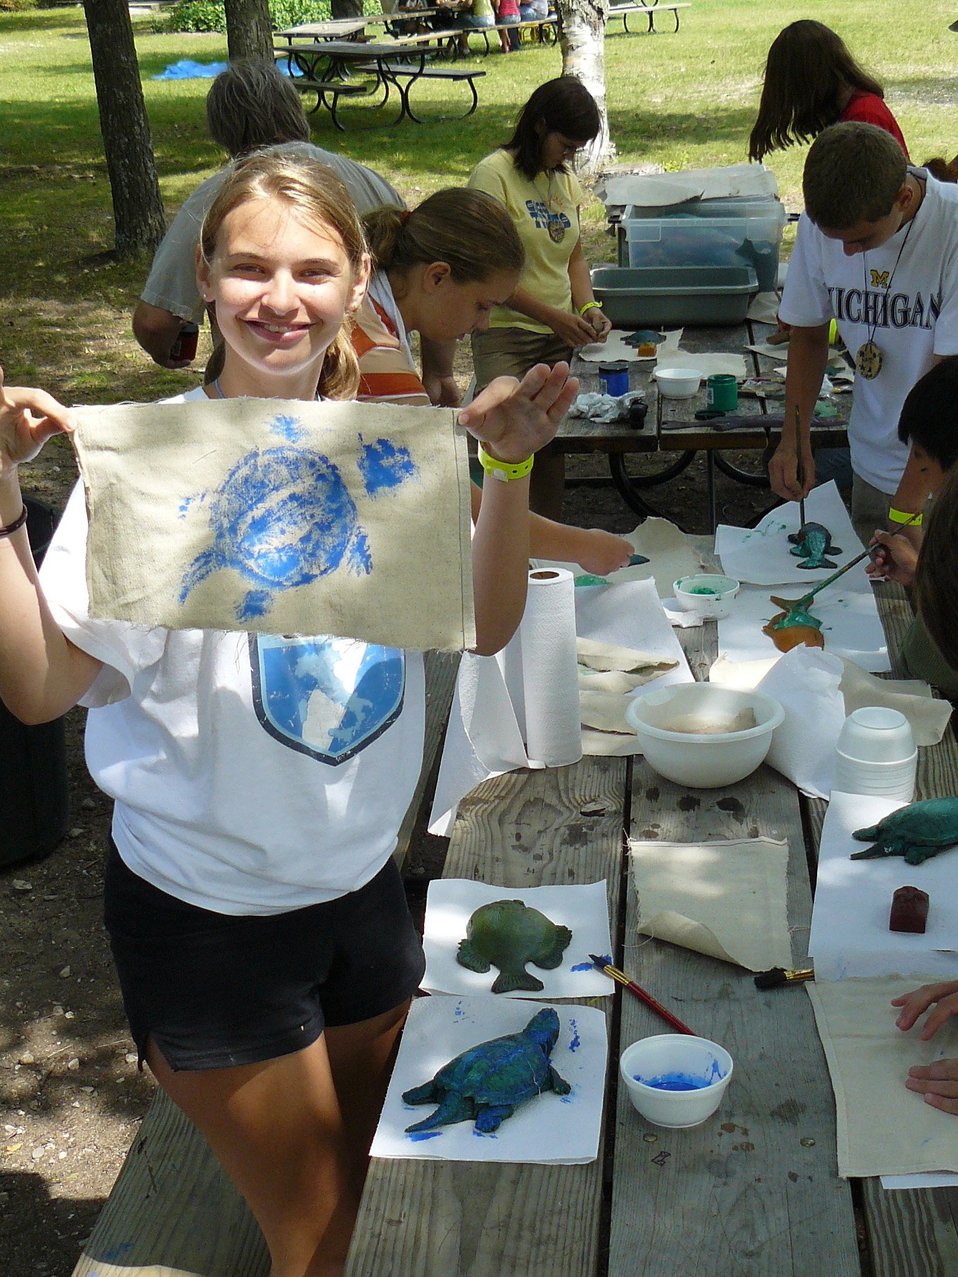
A Sea Grant sponsored function at which students produce artwork highlighting the fauna of the Great Lakes.